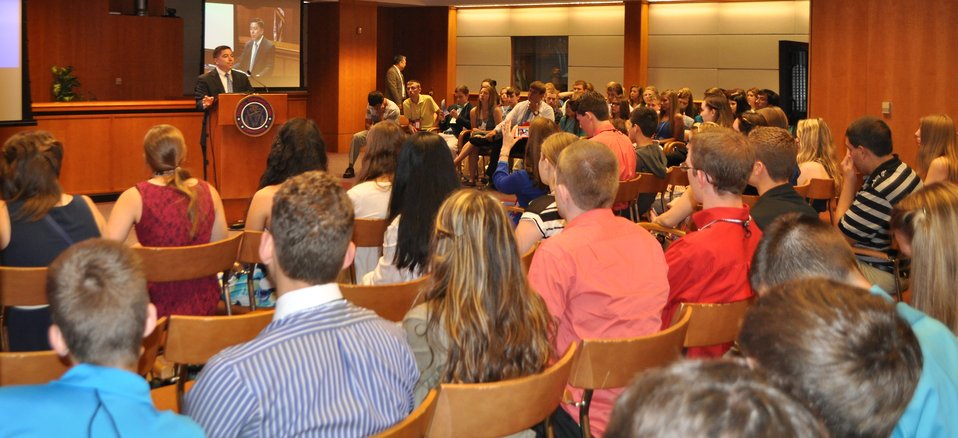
6.3.2014 Foundation for Rural Services Youth Tour

Commissioner O'Rielly speaking at the Foundation for Rural Services Youth Tour, 6/3/14.